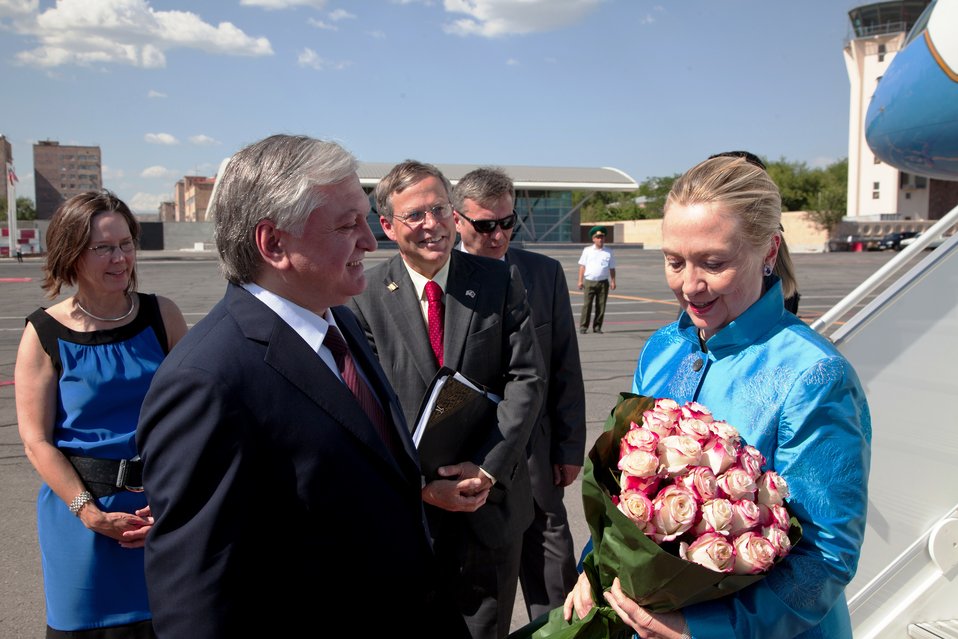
Secretary Clinton Is Greeted By Armenian Foreign Minister Nalbandian

U.S. Secretary of State Hillary Rodham Clinton is greeted by Armenian Foreign Minister Edward Nalbandian upon her arrival to Yerevan, Armenia, on June 4, 2012.